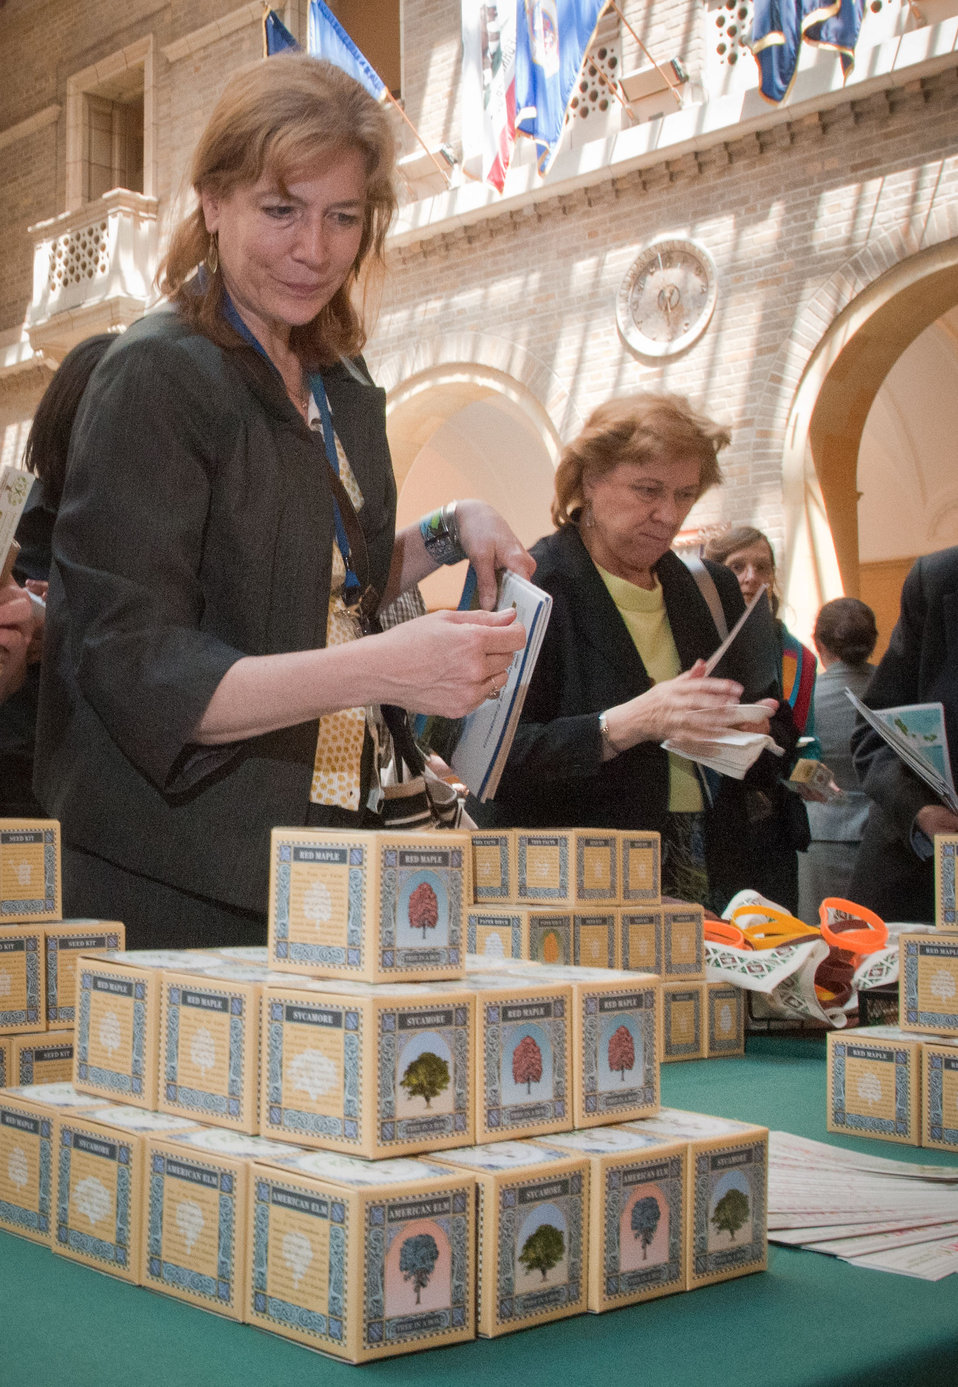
Guests at the International Year of Forests (IYOF) celebration for U.S. Department of Agriculture employees were able to receive a Tree in a Box, during the Friday, June 3, 2011 event on the Patio of the Whitten Building, U.S.Department of Agriculture in Washington, DC.